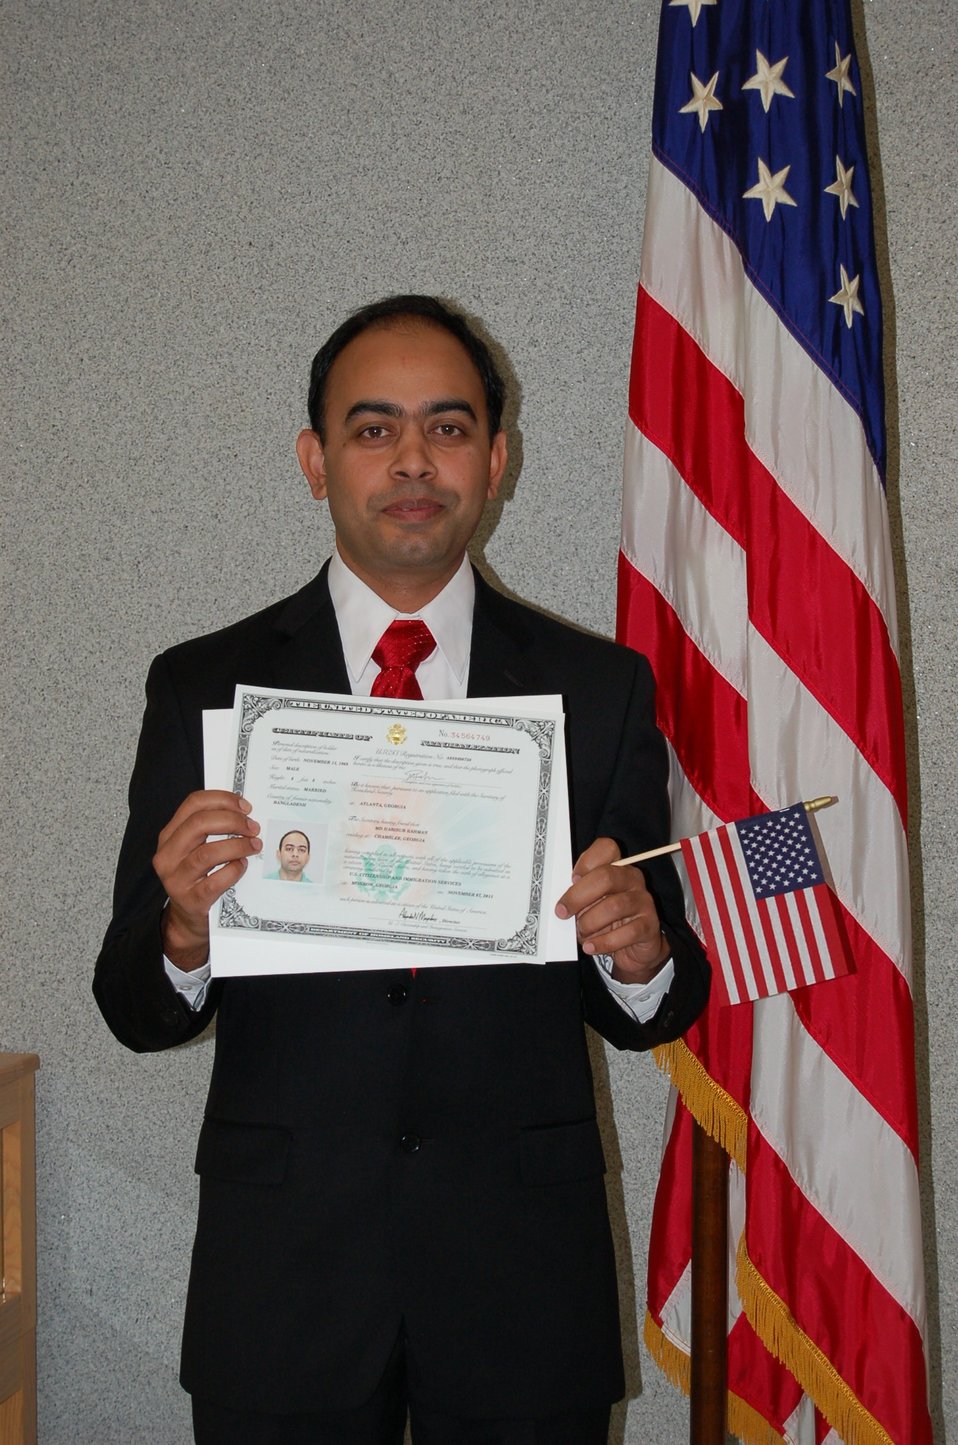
New Citizens